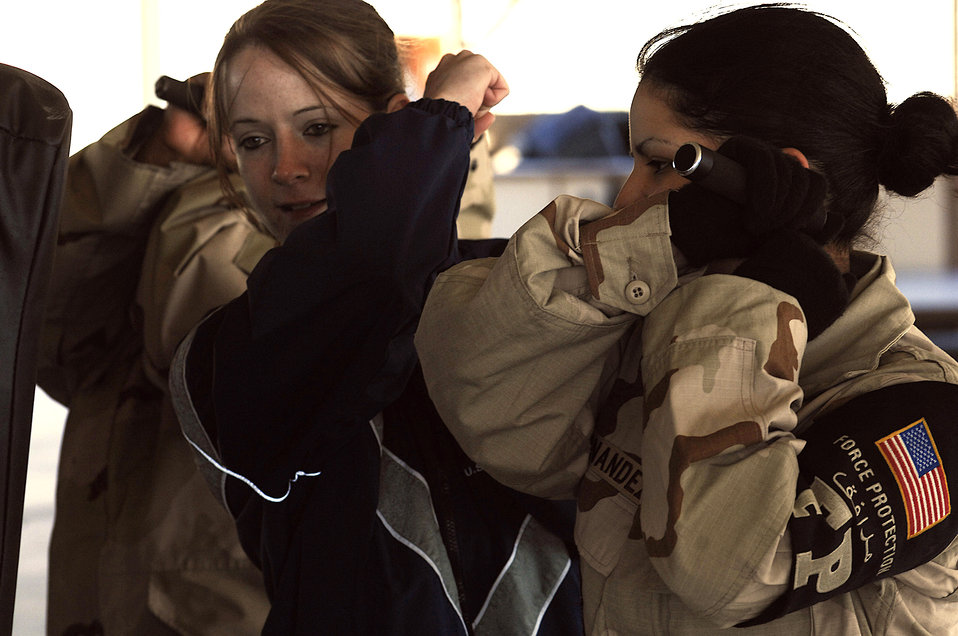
The non-lethal force be with you

Airman 1st Class Amber Motske (left) instructs Senior Airman Cassandra Hernandez on how to strike using her baton Jan. 24 during self-defense tactics training at an air base in Southwest Asia. The self-defense training familiarizes Airmen with how to use non-lethal force to defend themselves. Both Airmen are assigned to the 386th Expeditionary Security Forces Squadron and are deployed in support of Operation Iraqi Freedom.